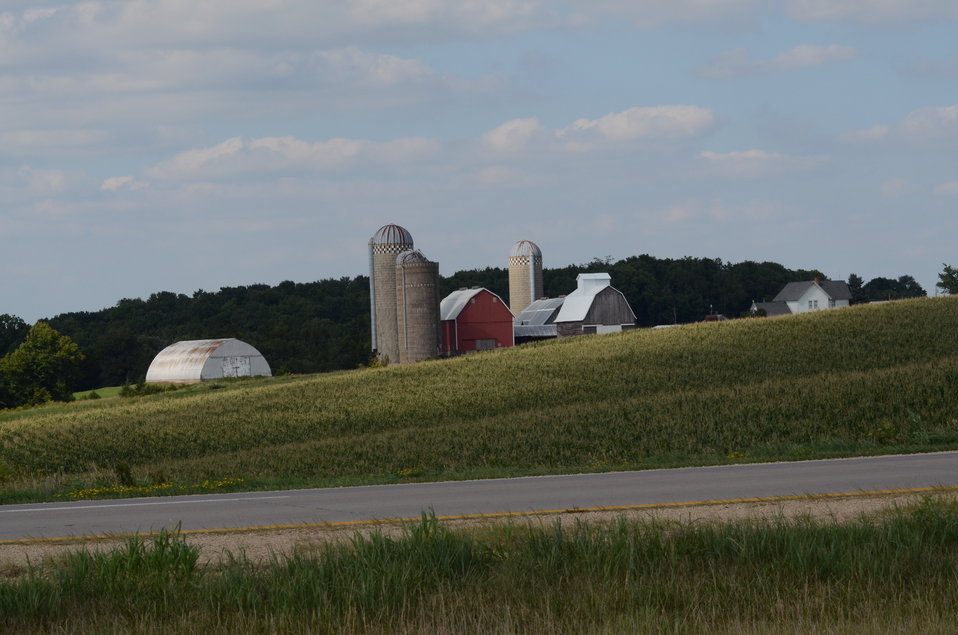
Dairy Farm near Poesta, IA, on Tuesday, Aug. 16, 2011.